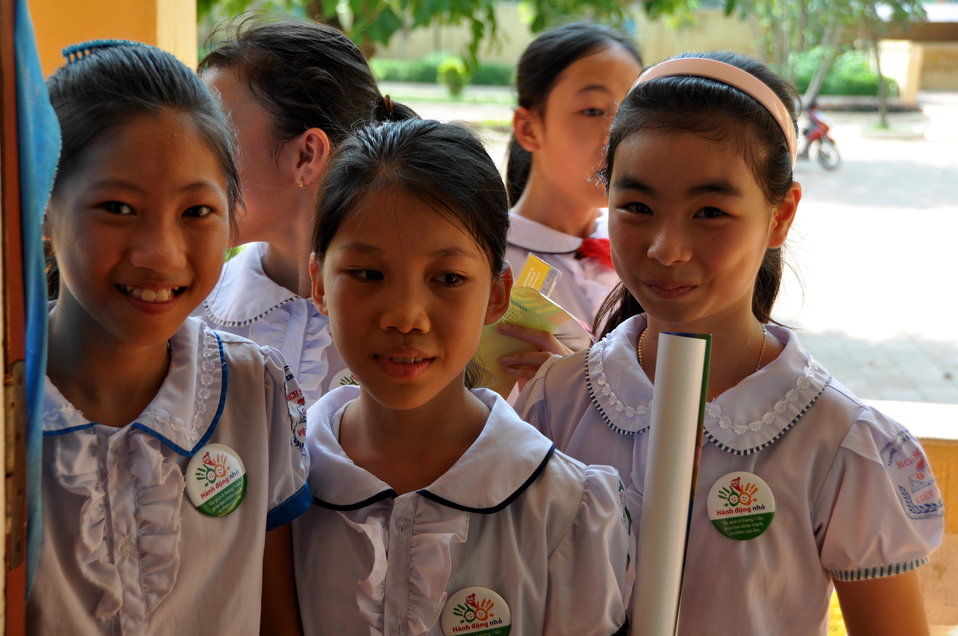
USAID supports deworming education and medication distribution in Bac Giang Province

May 20, 2013